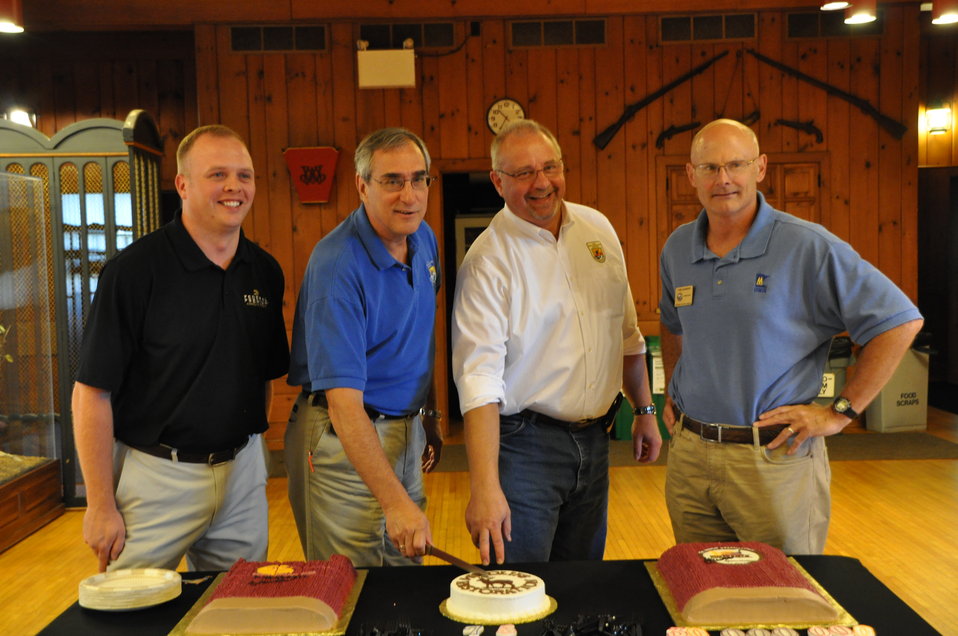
Cutting the Cake!

Cutting the cake to celebrate the Wildlife and Sport Fish Restoration Program's 75th Anniversary.